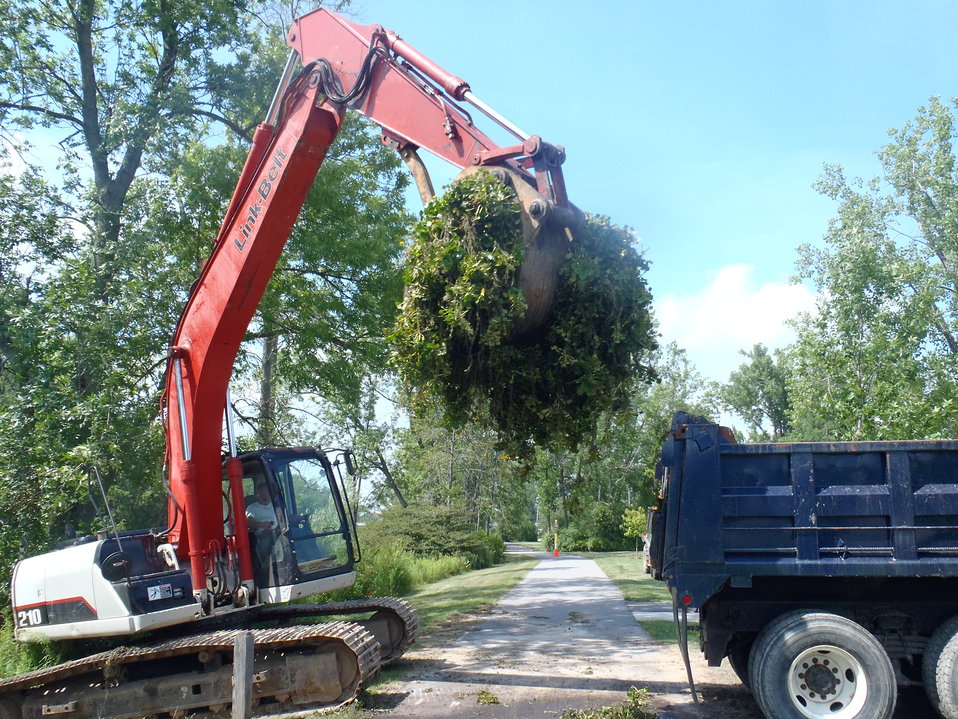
Water Chestnut Harvesting and Disposal

An excavator was used to remove over 700 cubic yards of water chestnut plants in 2010 from the harvester offload site on Tonawanda Creek. These were loaded directly into dump trucks operated by Erie County Department of Parks, Recreation, and Forestry and hauled to a compost facility in the Town of Amherst, NY.